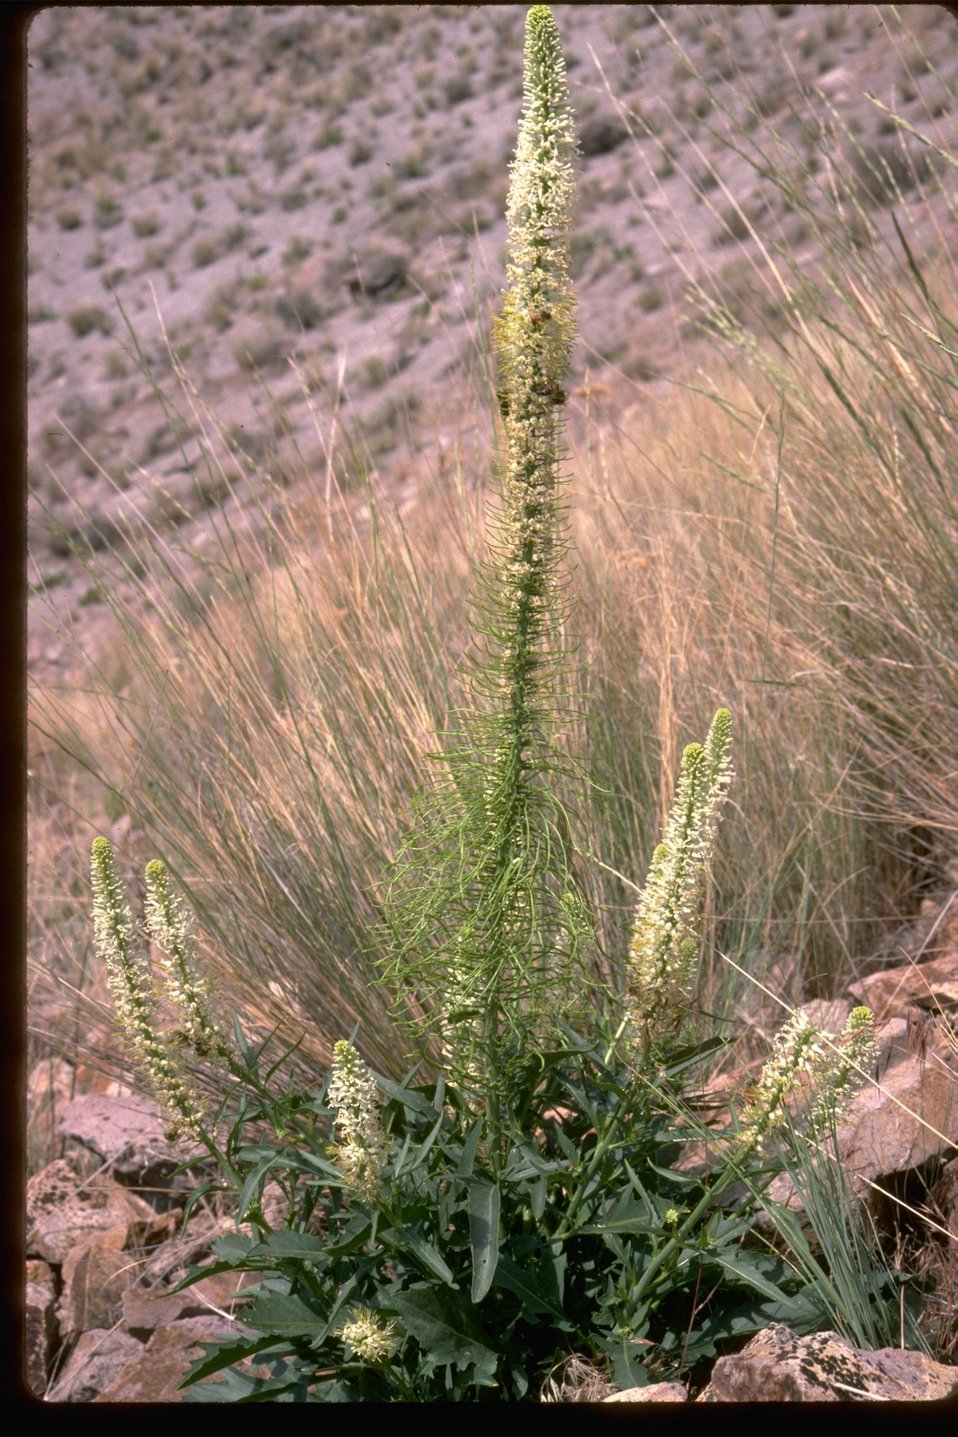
Cut-leaf thelypodium from the Mustard family. Its botanical name is Thelypodium from the Brassicaceae family. Flowering season: May-June.